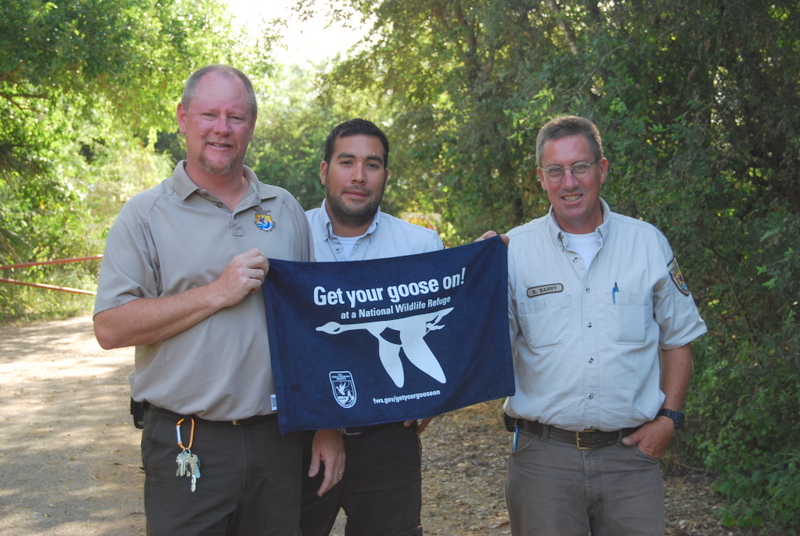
Get Your Goose On!

Photo taken at Santa Ana National Wildlife Refuge in southern Texas.